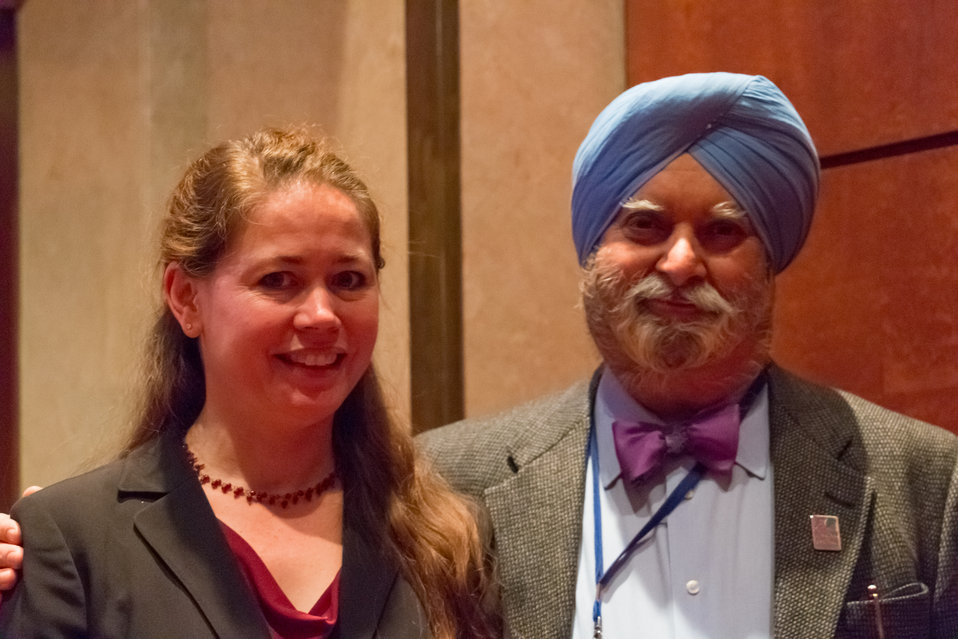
VHAP Launch (377 of 511)